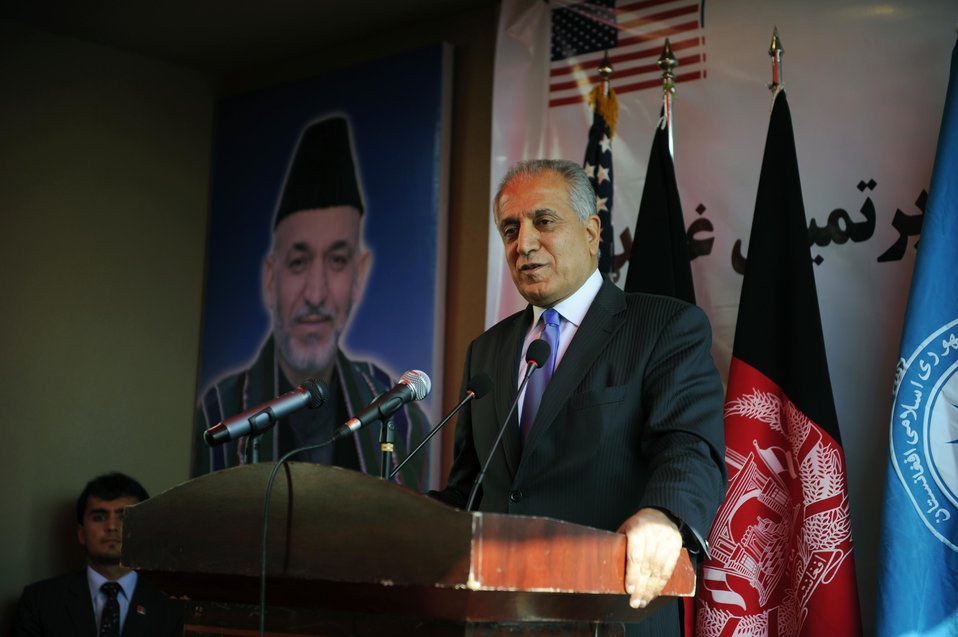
Former U.S. Ambassador Zalmai Khalilzad speaks at the inauguration of the Ghazi School in Kabul. U.S. Deputy Ambassador to Afghanistan James B. Cunningham, Afghan Minister of Education Abdul Rahim Wardak and visitng former U.S. Ambassador to Afghanistan Zalmai Khalilzad officially inaugurated the newly rebuilt Ghazi High School in West Kabul October 23, 2011. Former alumni of the school include both Ambassador Khalilzad and Afghan President Hamid Karzai. The school was destroyed during 30 years of fighting in Afghanistan, and was refurbished by the U.S. Agency for International Development. (Department of State)